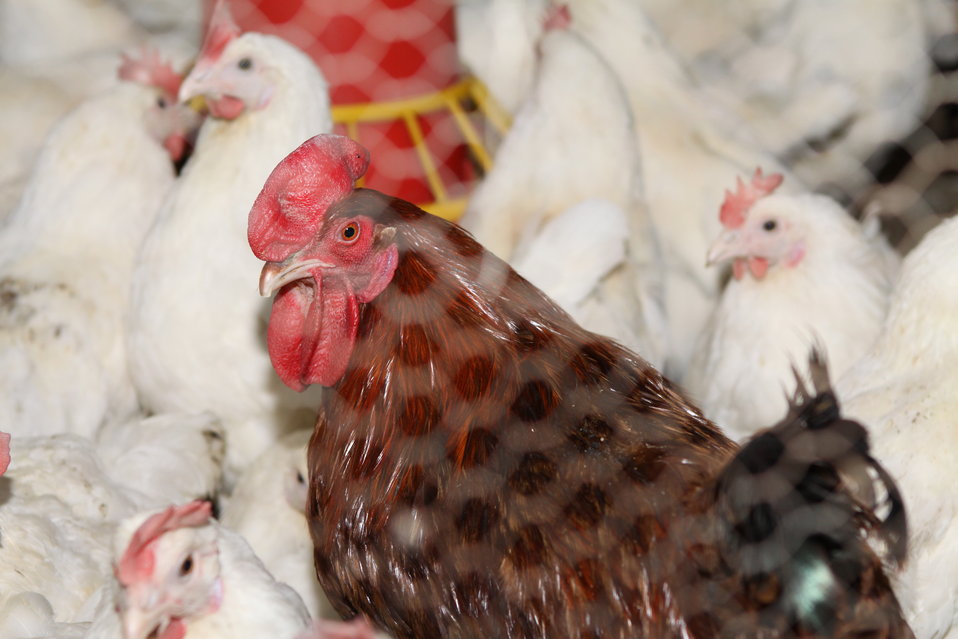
Bolan Poultry Farm